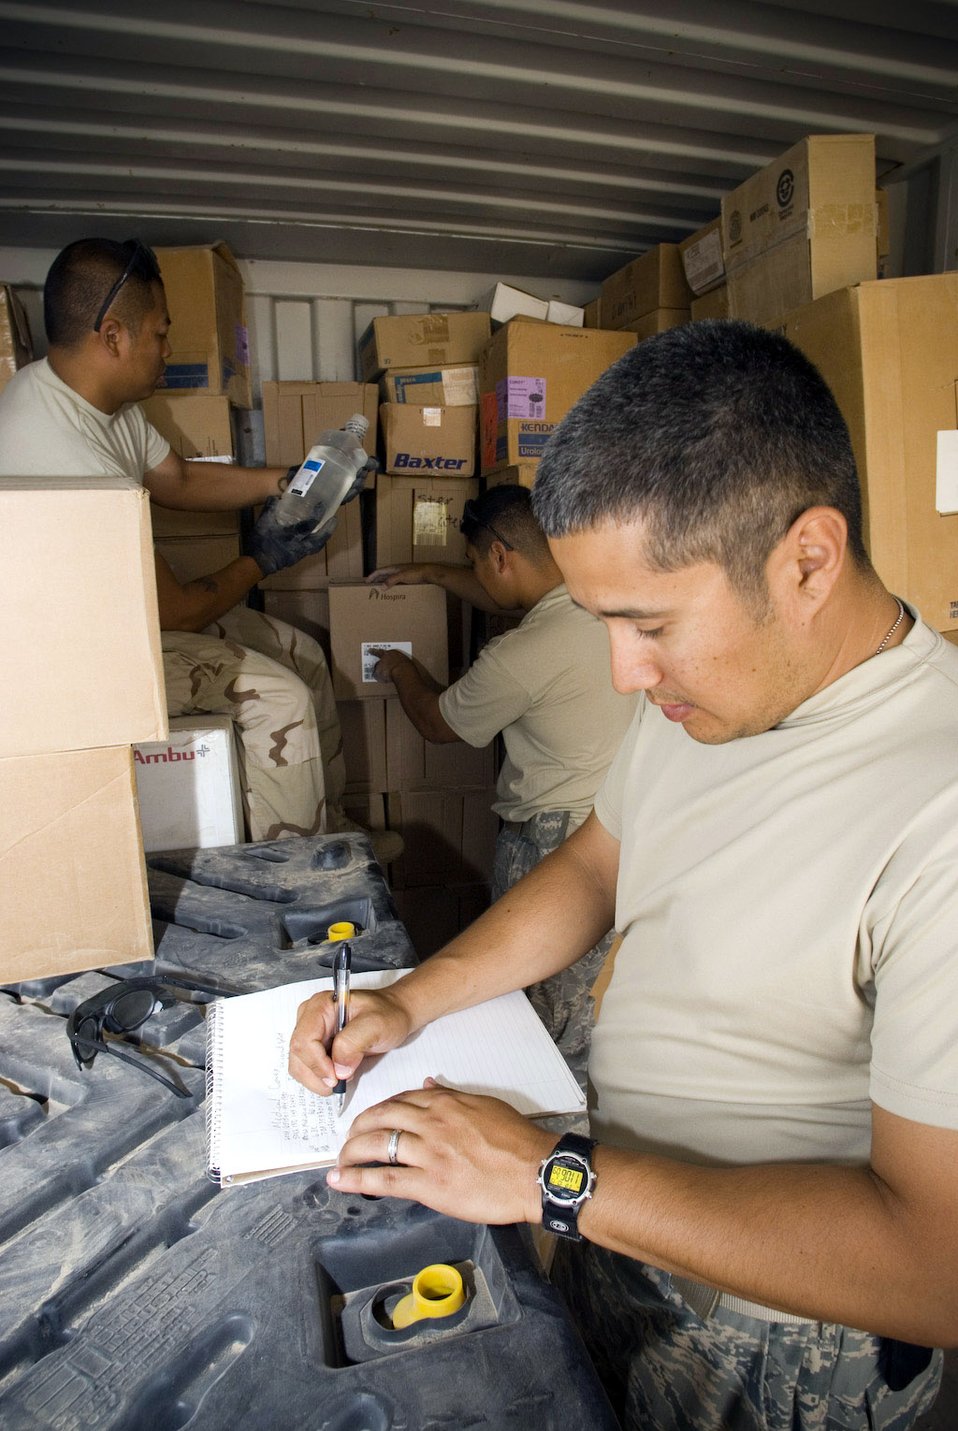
Mobile readiness team supports Army in Iraq

Tech. Sgt. Richard Carditl (front) records the product name, quantity and national stock number of the items read off to him by Staff Sgt. Benito Isla (left) and Staff Sgt. Dendouang Moungsiharat inside a container express Oct. 19 at Camp Corregidor, Iraq. Serviceable assets recovered from the conex are inventoried and redistributed to Army units throughout Iraq. Airmen of various career fields augment the Army in nontraditional